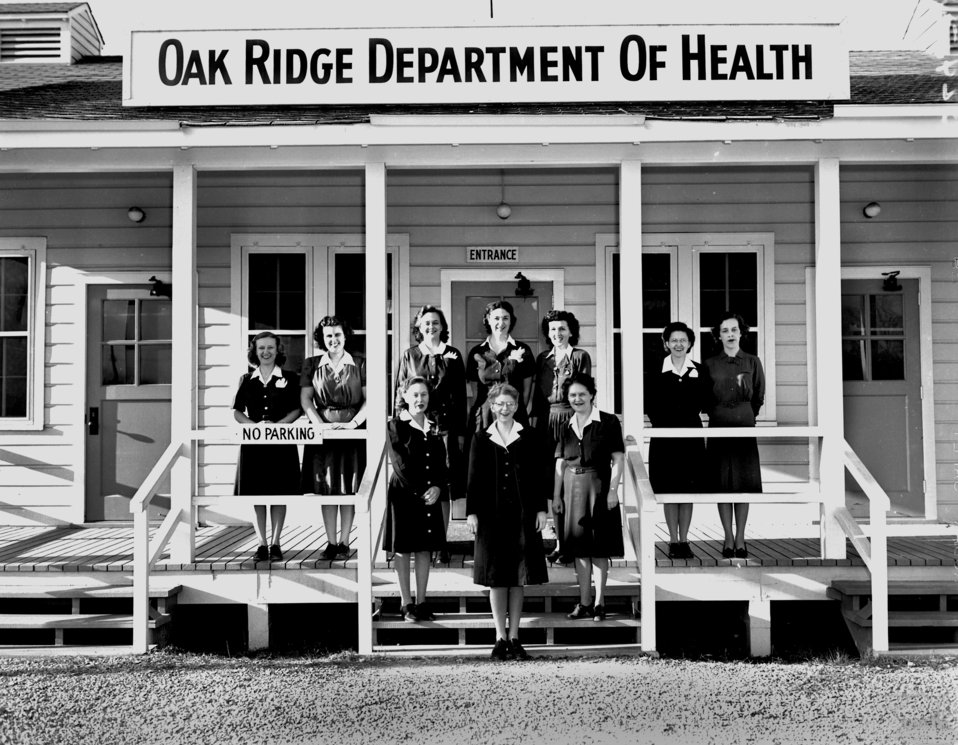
Oak Ridge Health Department

3245-9a DOE photo Ed Westcott 1-23-1947 Oak Ridge Tennessee